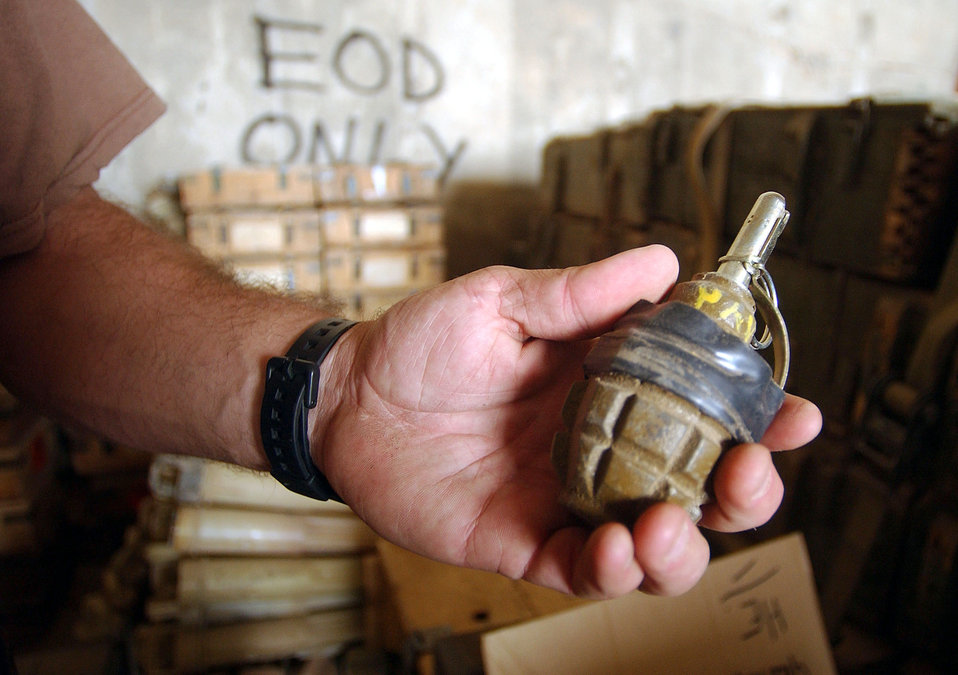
Weapons cache

OPERATION IRAQI FREEDOM -- Master Sgt. Mo Mustafa, 43rd Civil Engineer Squadron, Explosive Ordinance Disposal, Pope AFB, N.C., holds a grenade found in a weapons cache at Baghdad International Airport May 7, 2003. Baghdad International Airport is a primary base of operations for U.S. troops, cargo and humanitarian airlift for Operation Iraqi Freedom.